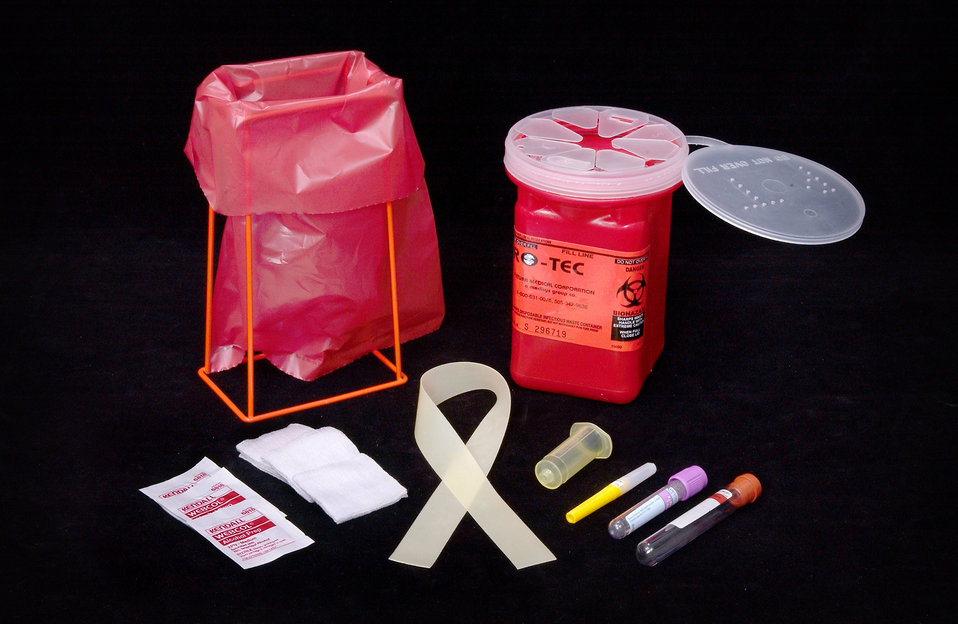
This image depicts the contents of a Vacutainer� kit used in performing a proper venipuncture by a trained phlebotomist, i.e., a technician skilled in the practice of drawing blood from a patient. This image is the first in a series of 19 images outlining the steps involved in extracting blood from the antecubital vein located at the anterior elbow region of the arm.